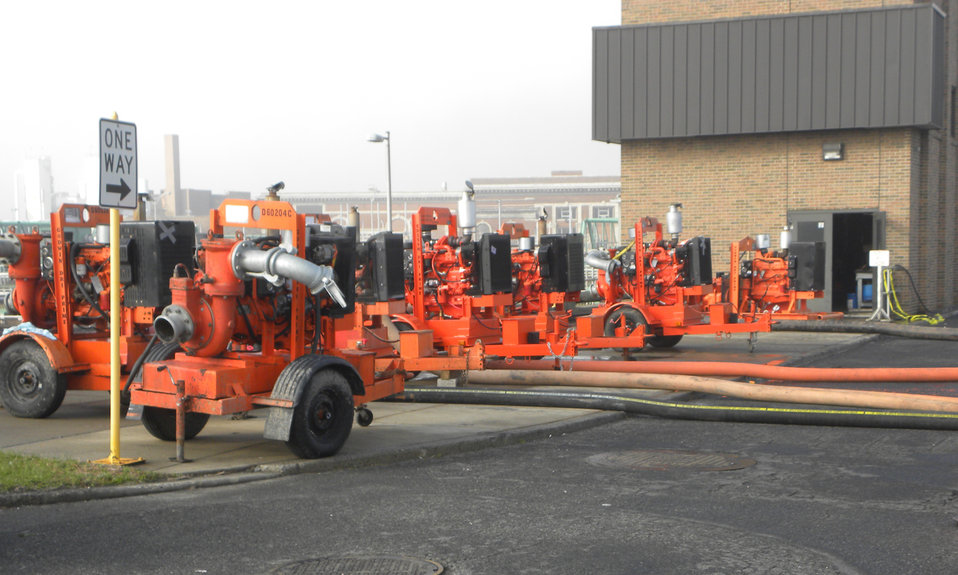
Pumping out Newark wastewater plant

A view of pumps used to de-water the Passaic Valley Sewerage Commission plant in Newark, N.J., inundated by more than 200 million gallons of seawater in the storm surge after Hurricane Sandy, shown in November 2012. One of the U.S. Army Corps of Engineers’ missions under the federal government’s Sandy response and recovery efforts is helping return critical public infrastructure damaged by the storm to service.